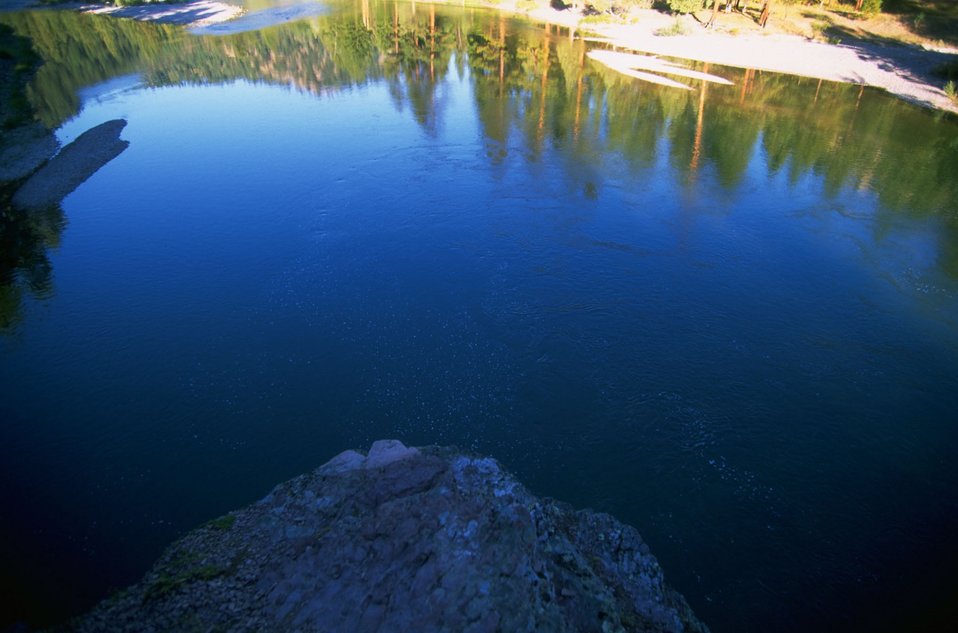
Pine trees/forest reflection in Blackfoot River